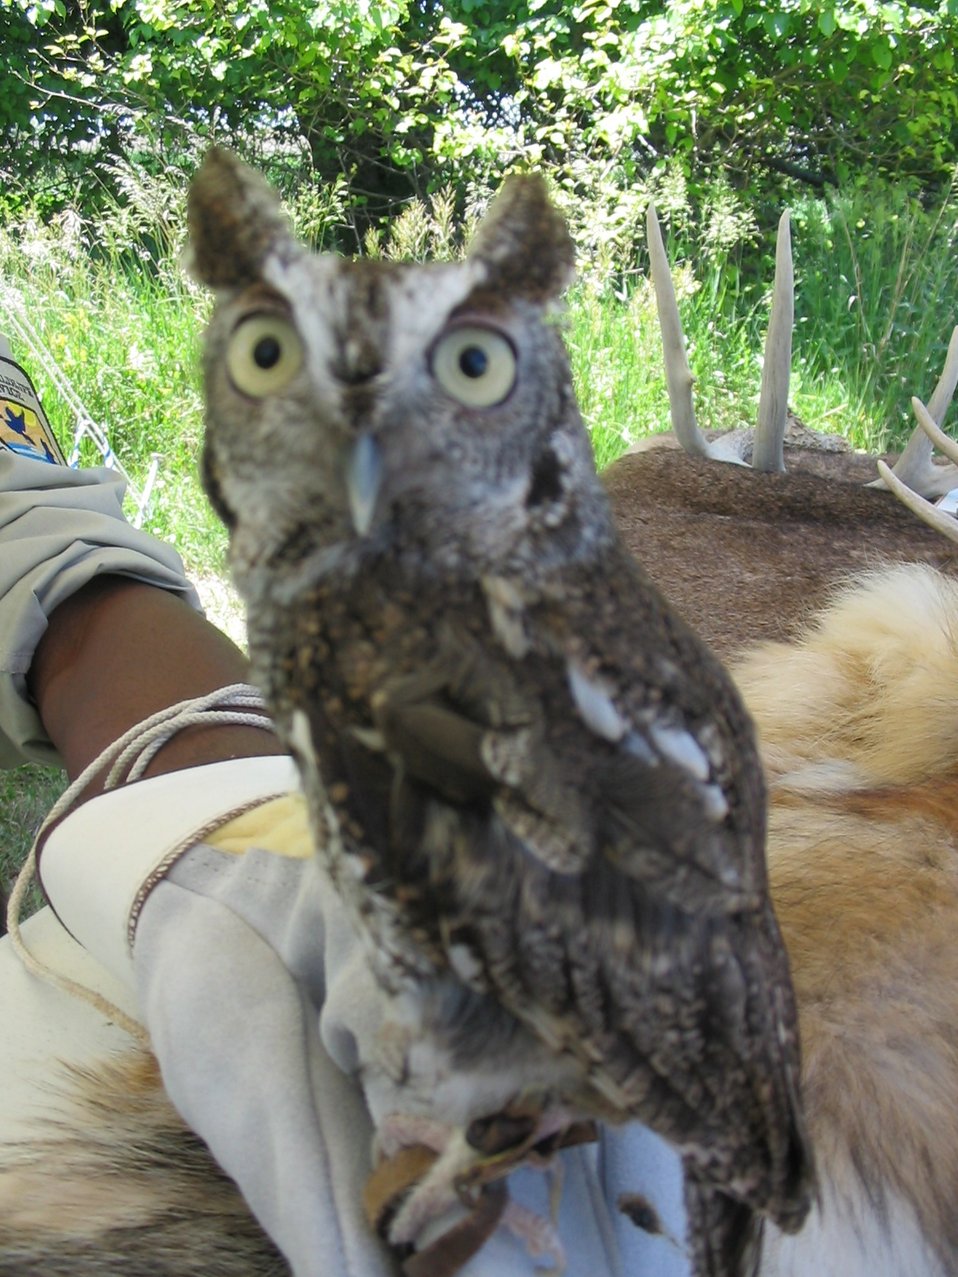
Owl